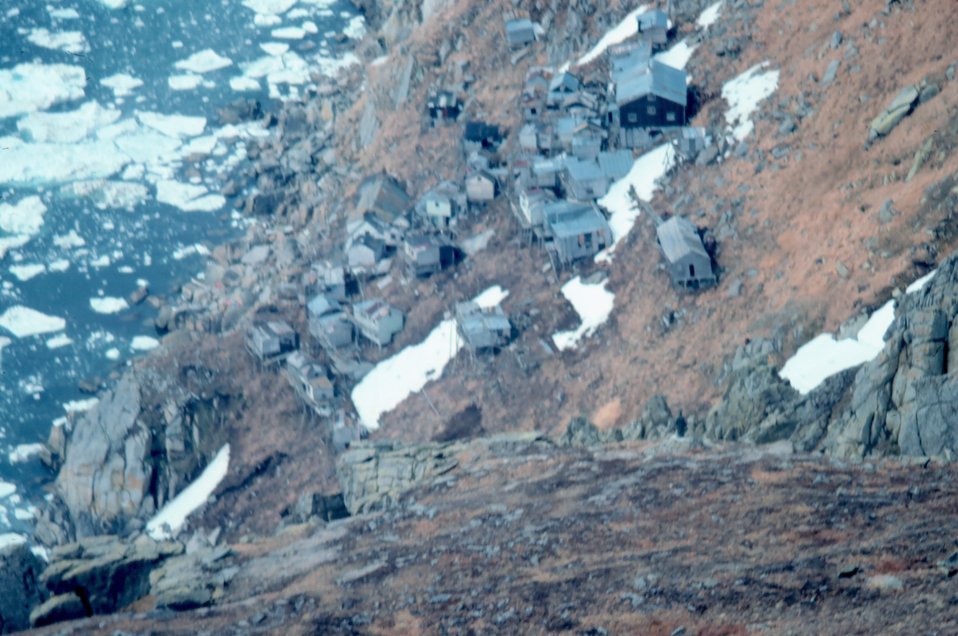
The stilt village of Ukivok - this is now deserted.